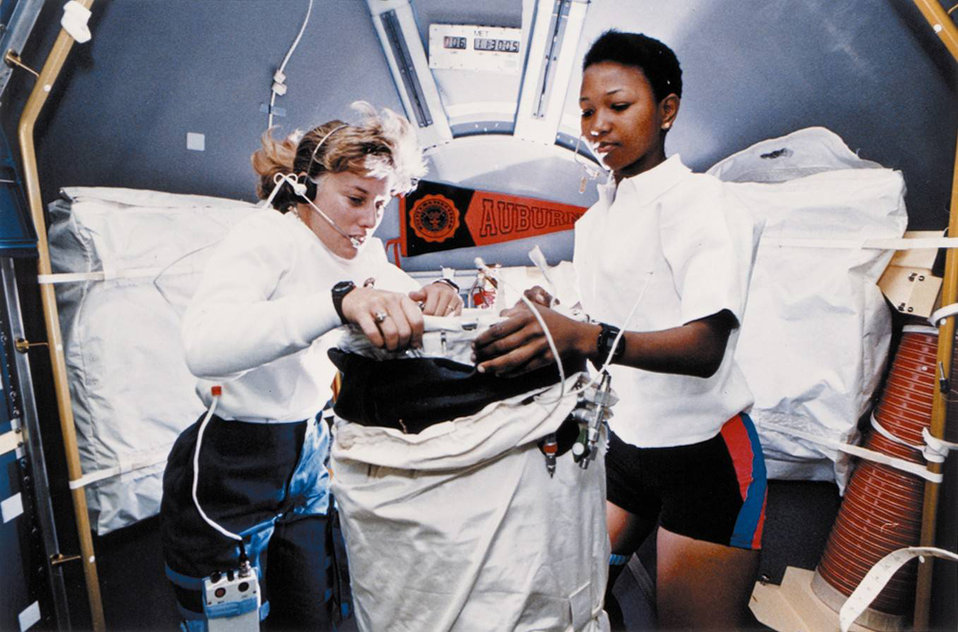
Dr. Mae Jemison was the first African-American woman to travel into space.